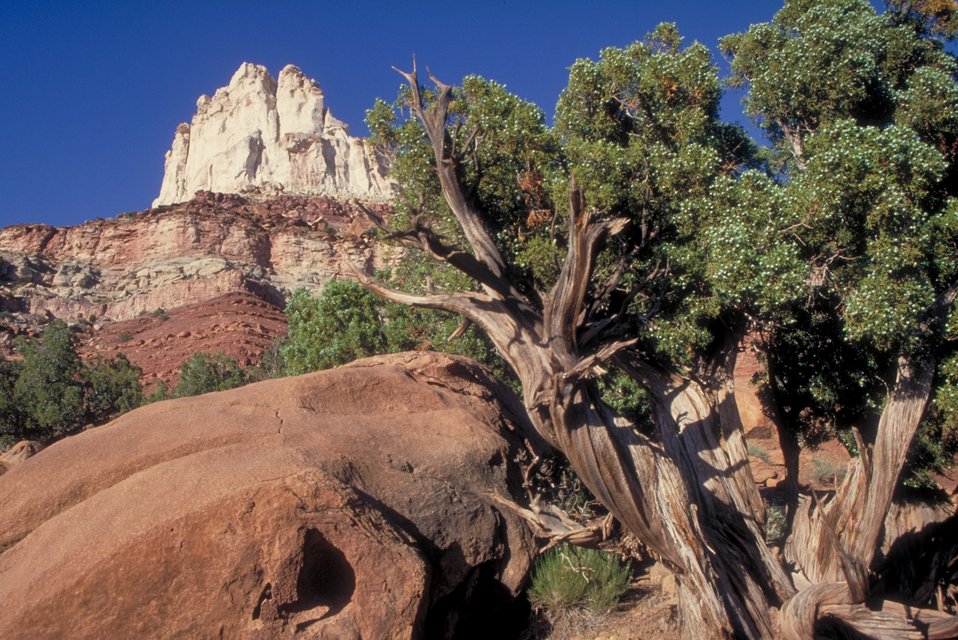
Temple Mountain, San Rafael Swell.